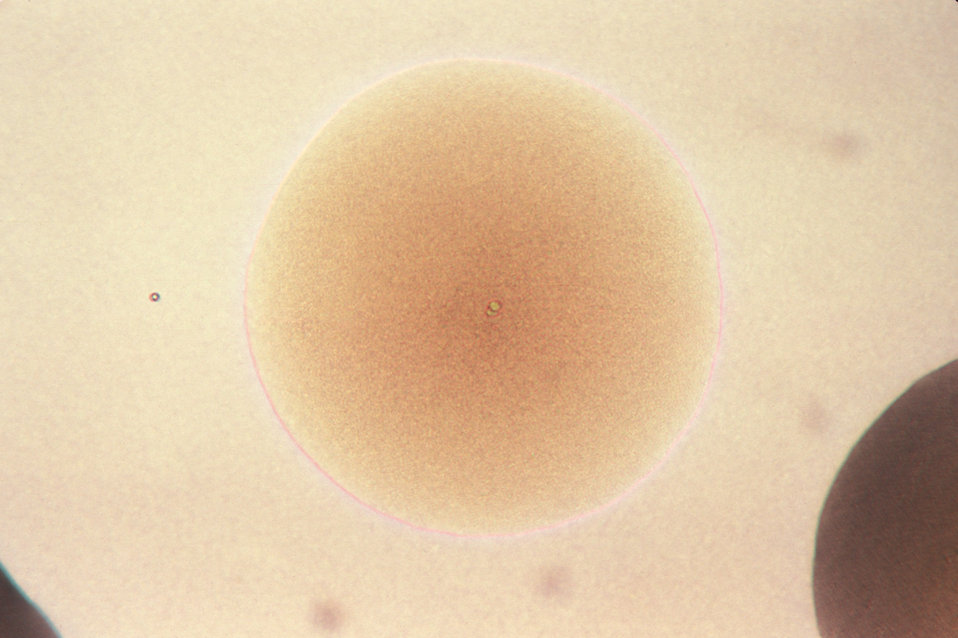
This is a photomicrograph of a T4 colony of Neisseria gonorrhoeae bacteria; Magnified 100X.